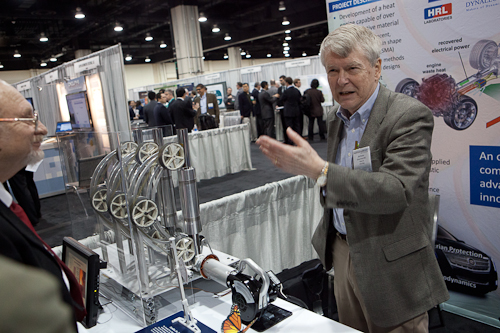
General Motors' Waste Heat Recovery System

Detroit-based ARPA-E awardee General Motors explains their waste heat recovery system. If successful, GM’s shape memory alloy heat engine technology would increase the fuel efficiency of U.S. vehicles up to 10% -- reducing the consumption of up to 380 million barrels of oil every year.